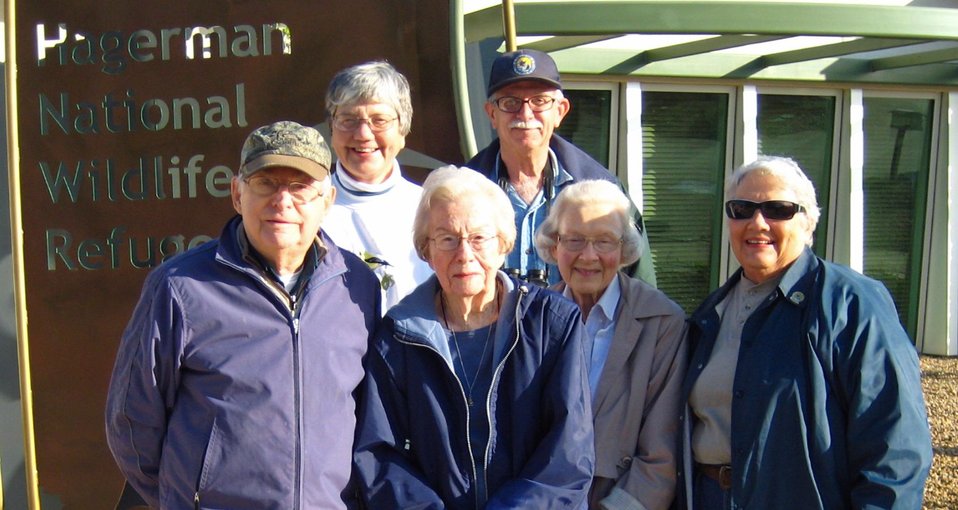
Karl outside 1